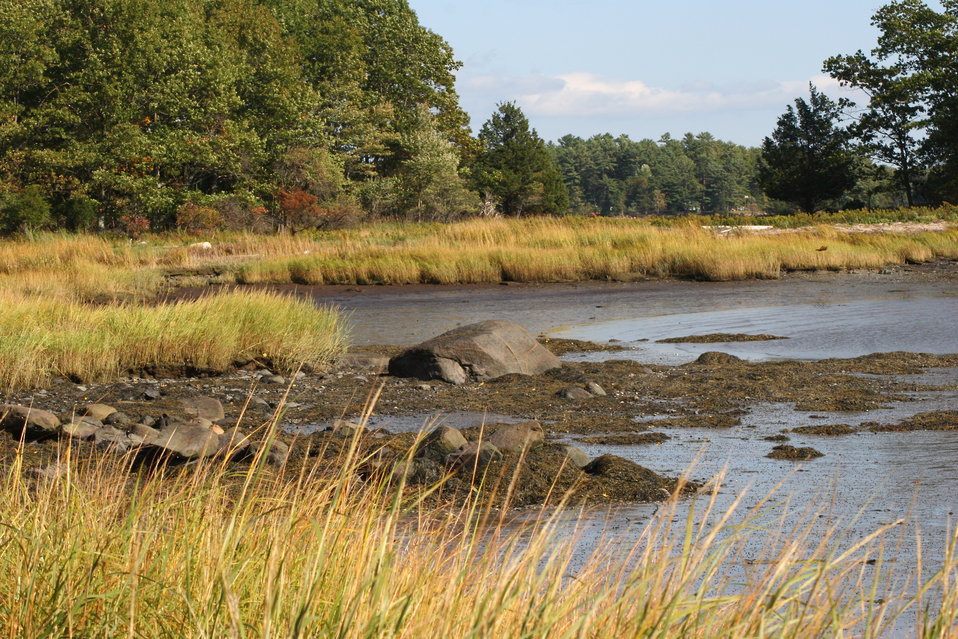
Great Bay National Wildlife Refuge in Newington, NH.